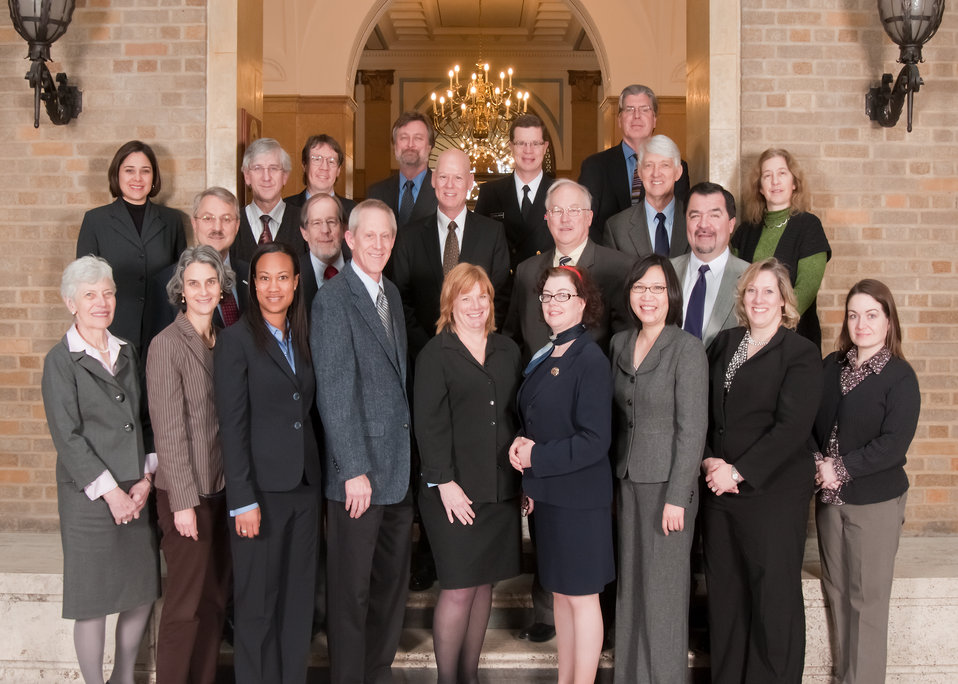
Center: Michael Landa, Acting Director, Center for Food Safety and Applied Nutrition Food and Drug Administration, Health and Human Services the host agency, Sherri Dennis and Kerry Dearfield, Co-Chairs of the Interagency Risk Assessment Consortium and members of the Interagency Risk Assessment Consortium (IRAC) met in Washington, D.C., Tuesday, February 8, 2011, to sign the updated Charter of the Interagency Risk Assessment Consortium. The Consortium established by bthe President's Food Safety Council recommends that all federal agencies with risk analysis responsibilities for food satey estabilsh a Risk Assesment Consortium to collectively work to enhance communication and coordination among federal agencies and promote the conduct of scientific research that will facilitate the development and utlization of food safety risk assessments.